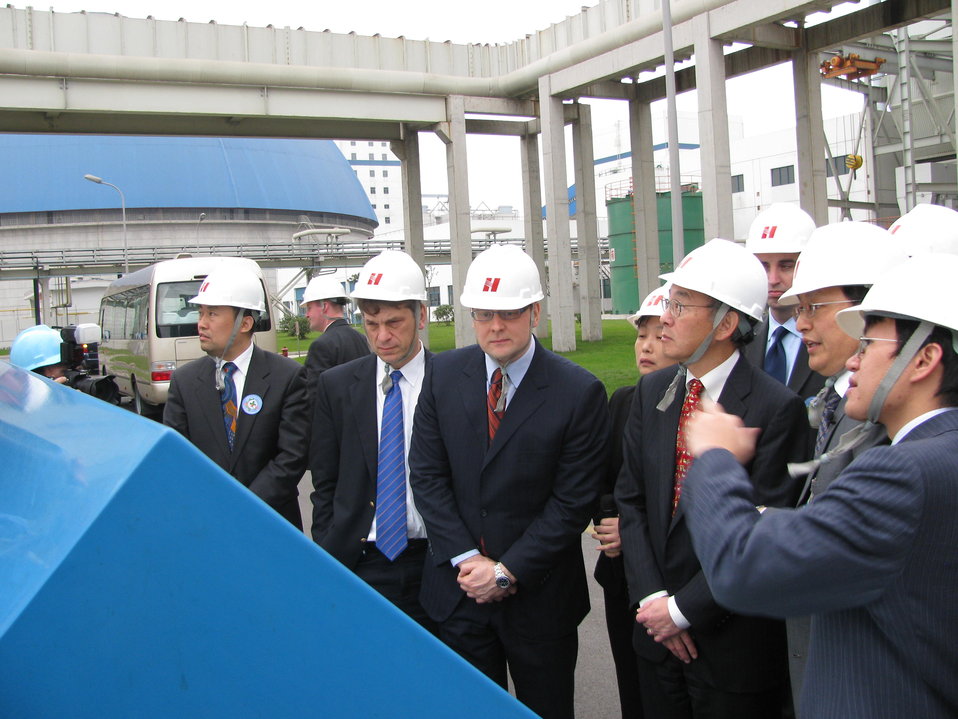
Shanghai 009